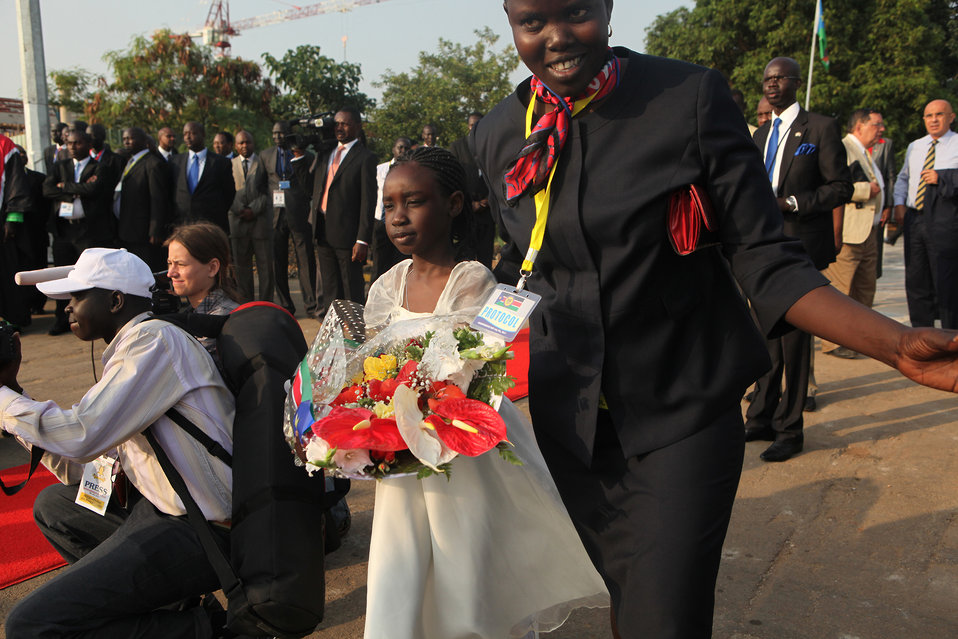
South Sudan Independence Day

South Sudanese girl offers flowers to an arriving delegation at Juba International Airport in Juba, South Sudan on July 9, 2011.